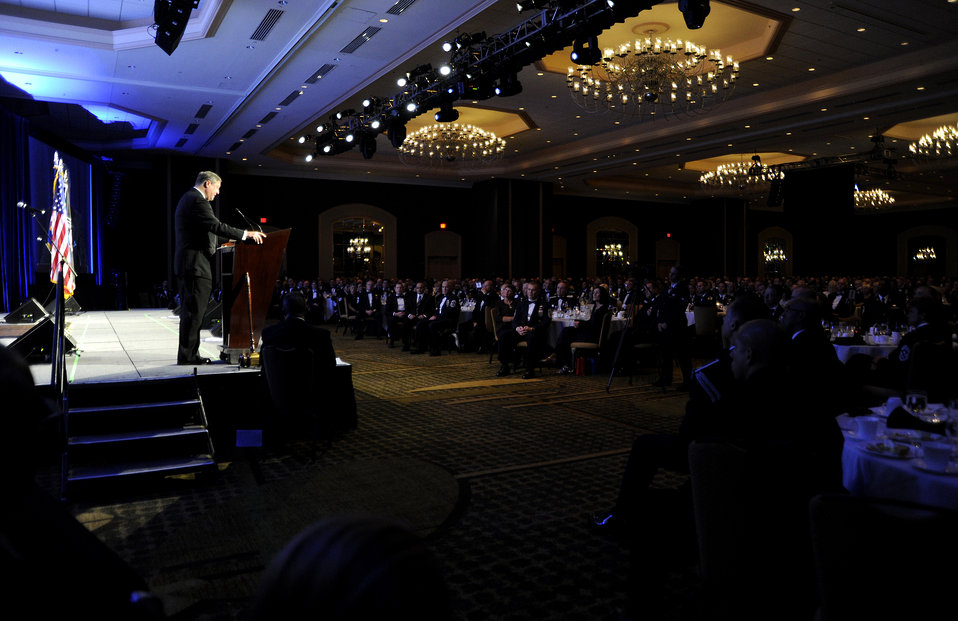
SecAF addresses AFSA

Secretary of the Air Force Michael Donley speaks during the 2012 Air Force Sergeants Association Professional Airmen's Conference honors banquet Aug. 15, 2012, in Jacksonville, Fla. During his speech, Donley emphasized the need to develop quality Airmen who adhere to standards and uphold the Air Force core values of integrity, service and excellence.